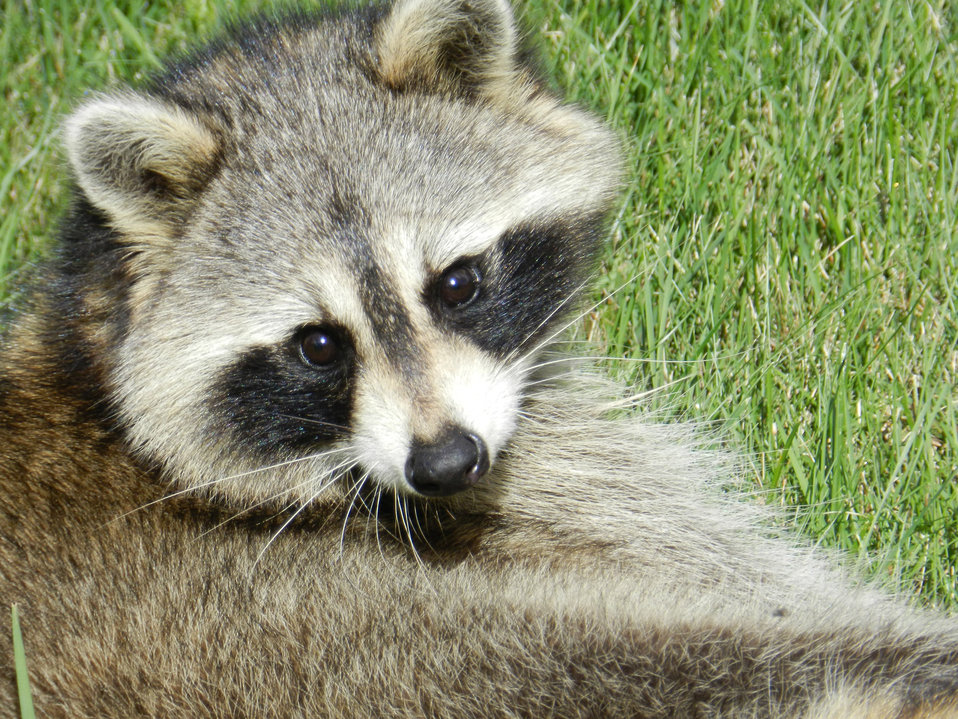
Raccoon # 1

Raccoon.